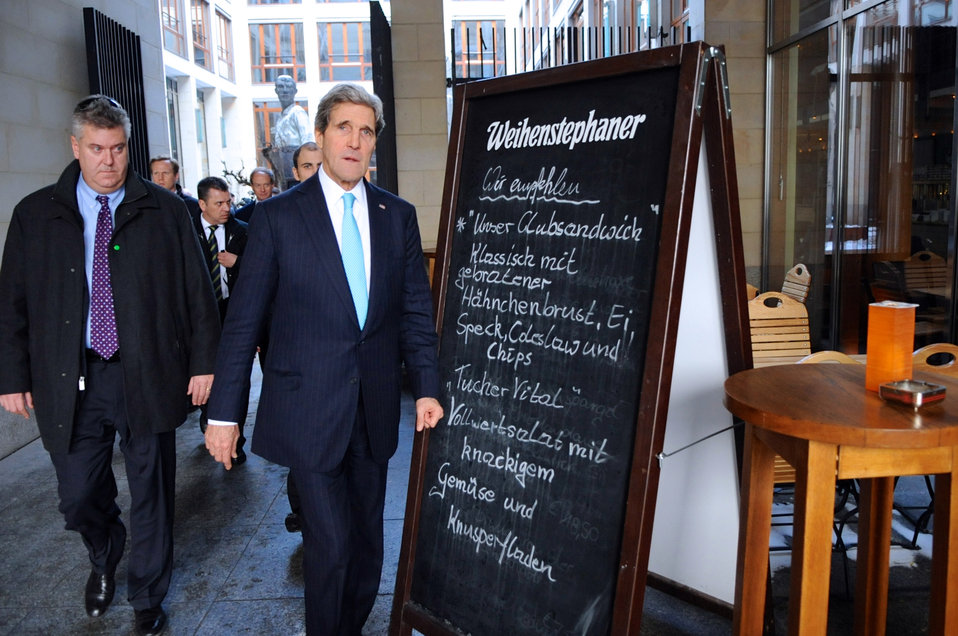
Secretary Kerry Makes an Impromptu Stop at a Berlin Restaurant

U.S. Secretary of State John Kerry passes the signboard for a restaurant in the shadow of the Brandenburg Gate while making an impromptu stop in Berlin, Germany, before a meeting with Chancellor Angela Merkel on January 31, 2014.